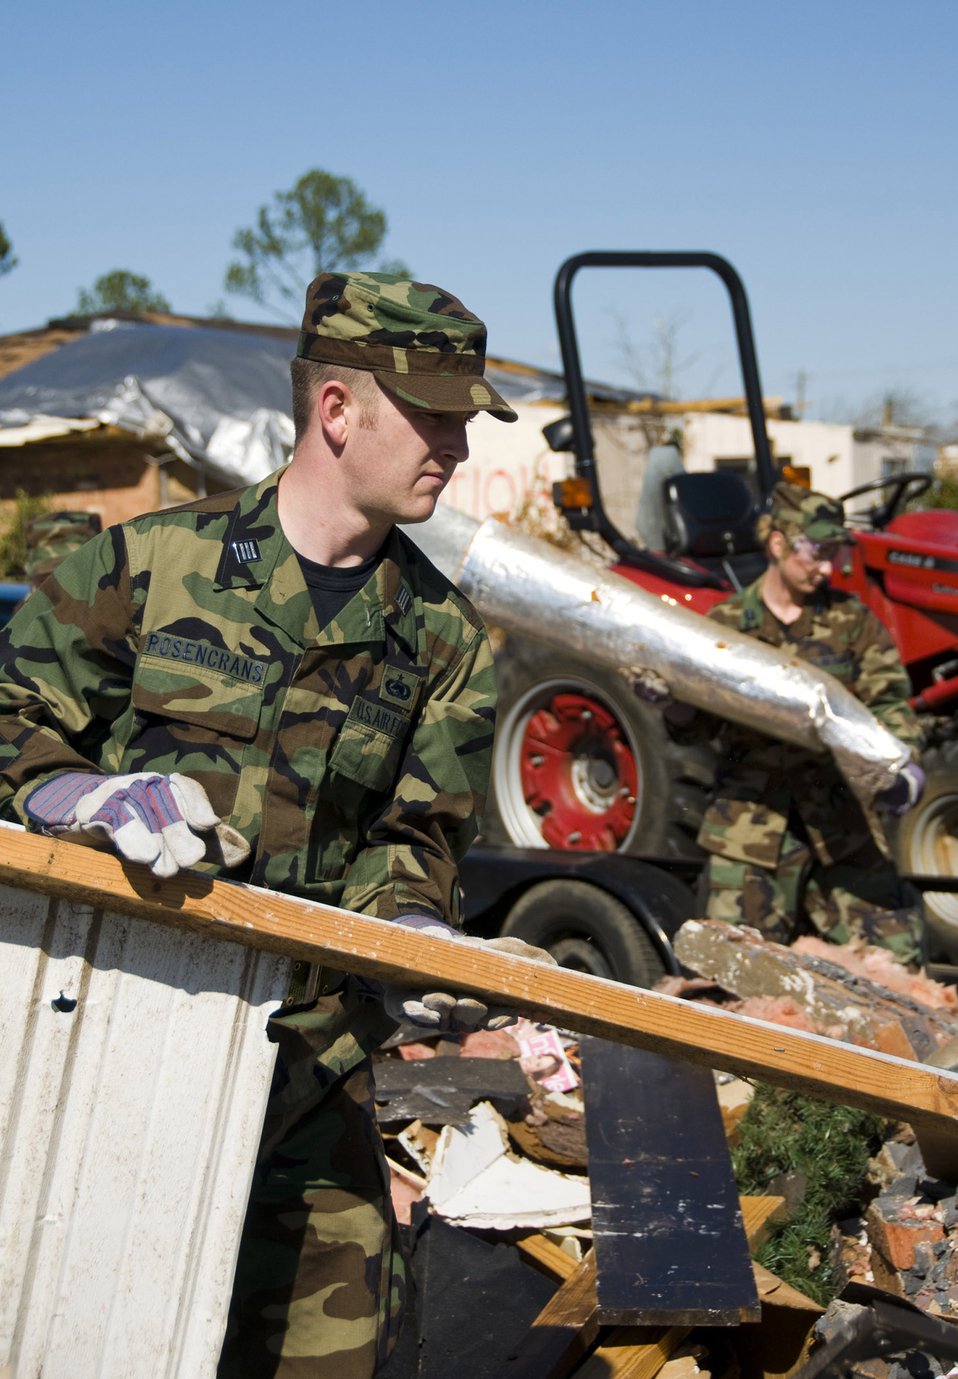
Maxwell Airmen assist city devastated by tornado

Officer Trainee Josh Rosencrans sorts housing debris caused by a Feb. 19 tornado that stormed through Prattville, Ala. More than 65 Officer Training School basic officer trainees and 20 other Airmen assigned to Maxwell Air Force Base, Ala., volunteered to help organize and clear debris from the city located 15 miles northwest of the base. Latest estimates indicate that more than 150 home were destroyed and 760 homes were damaged in a series of storms that created 150 mph winds. Of those homes, approximately 25 military homes were destroyed and 170 were damaged.